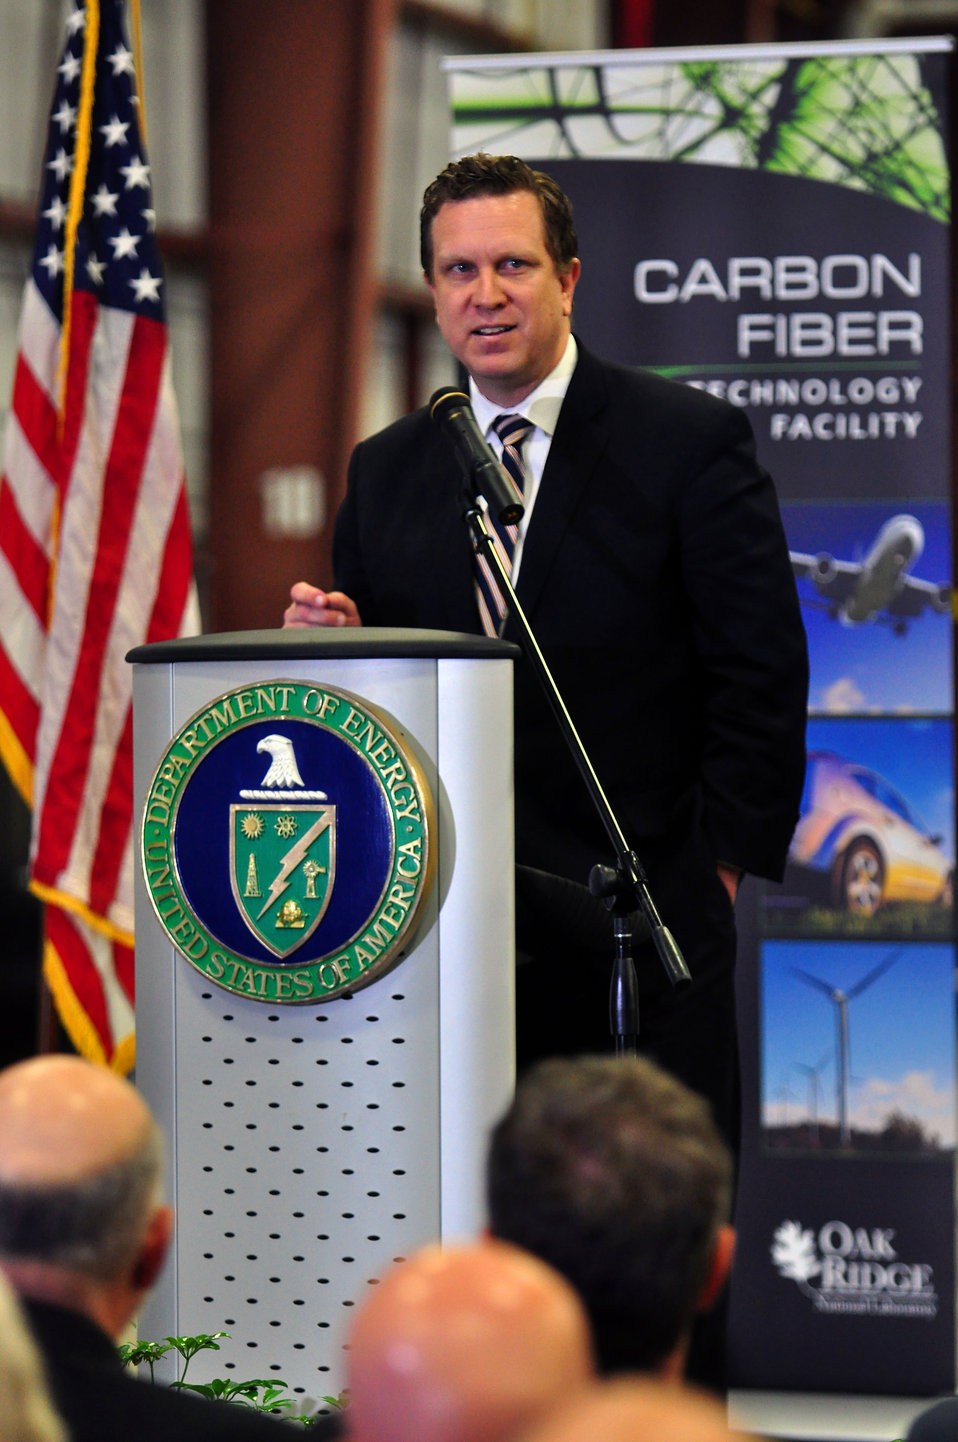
Carbon Fiber Technology Facilty Open House Oak Ridge Tennessee

13-025 DOE photo Lynn Freeny
Assistant Secretary for Energy Efficiency and Renewable Energy David Danielson